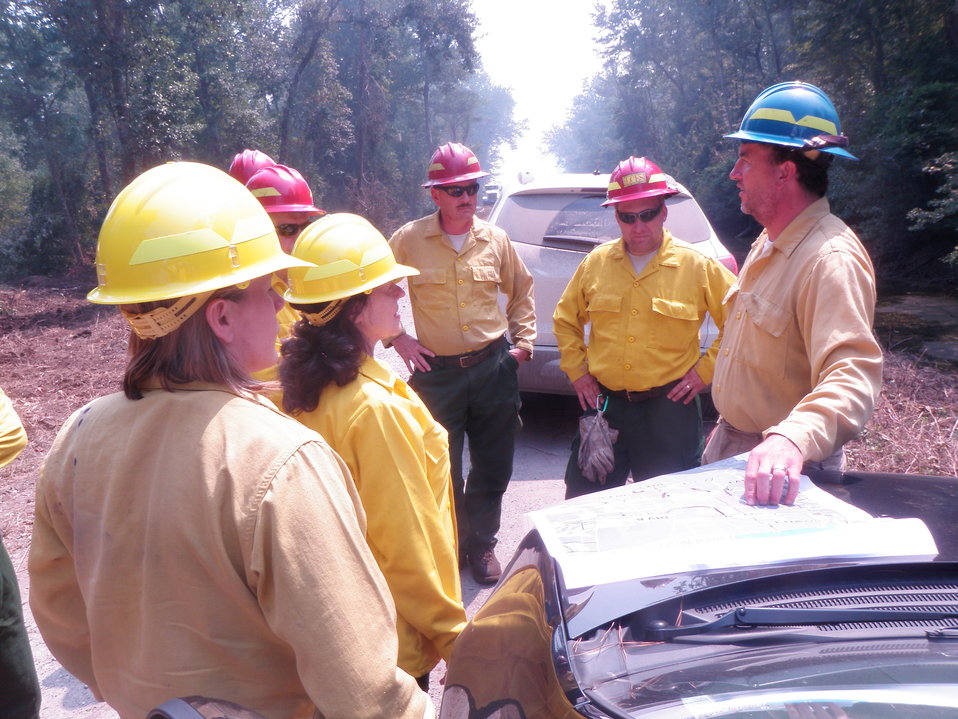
Lateral West tour

Suffolk, VA, August 3011. Division Supervisor A briefs Washington Office employees Deb Rocque and Martha Nudel of the National Wildlife Refuge System (left) about the Lateral West Fire on Great Dismal Swamp National Wildlife Refuge. Also lookin on are from left, Steve Hubner of the Northeast Region Fire Program and Refuge Manager Chris Lowie.